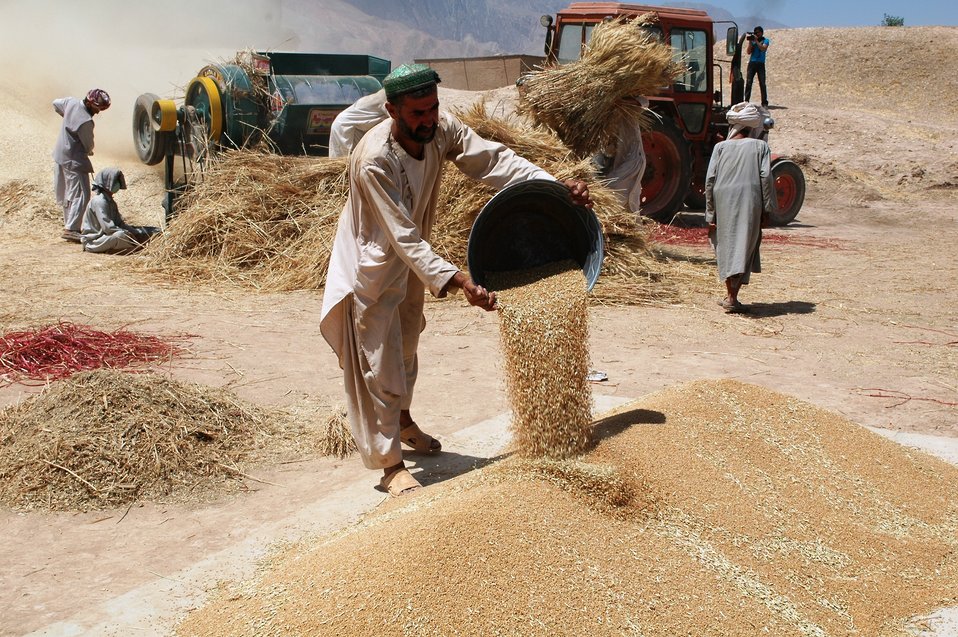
2009-June Balkh AVIPA wheat harvest